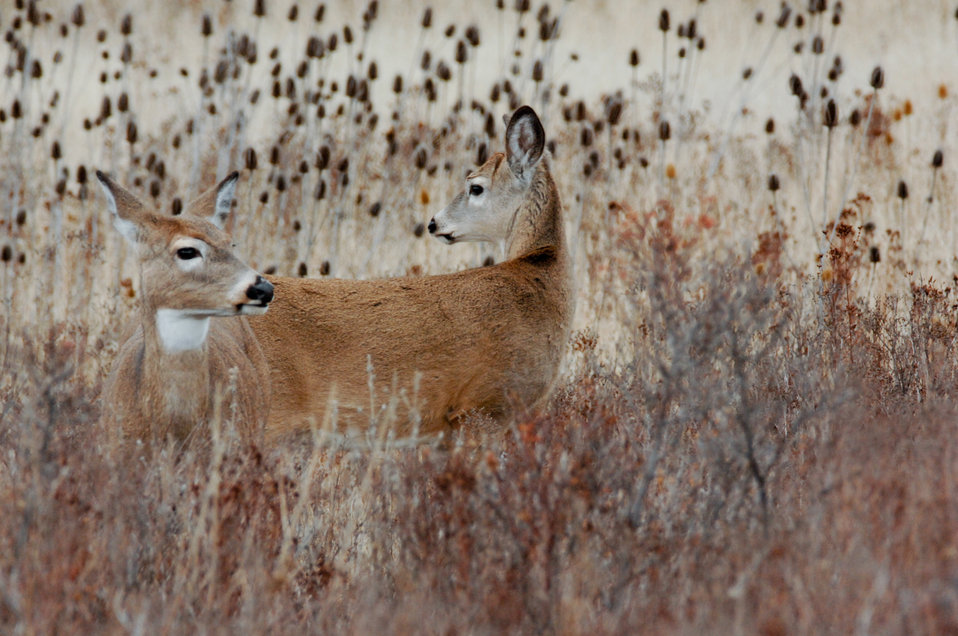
White tailed deer graze in the National Bison Range Wildlife Refuge in Montana on November 17, 2007. The U.S. Fish and Wildlife Service administers this refuge as part of the National Wildlife Refuge System. The refuge was established in 1908 and is one of the oldest Wildlife Refuges in the nation and was established to support a population of American bison. There are approximately 350-500 American bison. Other large wildlife found on the Range includes elk, whitetail and mule deer, pronghorn antelope, bighorn sheep and black bear.